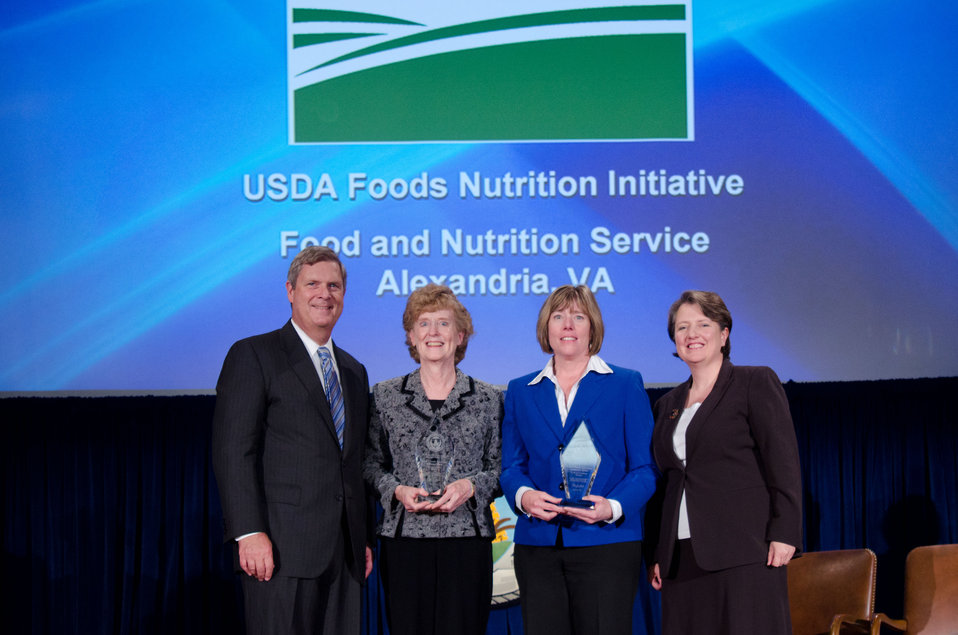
Agriculture Secretary Tom Vilsack (l) and Deputy Secretary Kathleen Merrigan (r), presents the
Ensuring That All Of America’s Children Have Access To Safe, Nutritious and Balanced Meals
Award to USDA Foods Nutrition Initiative. Food and Nutrition Service, Alexandria, VA. Janet El Tenney and Laura L. Walter, Group Leaders. For Improving the nutritional quality of USDA foods by significantly reducing fat and sodium content. On Wednesday, September 14, 2011 in the Jefferson Auditorium at the US Department of Agriculture in Washington, DC.